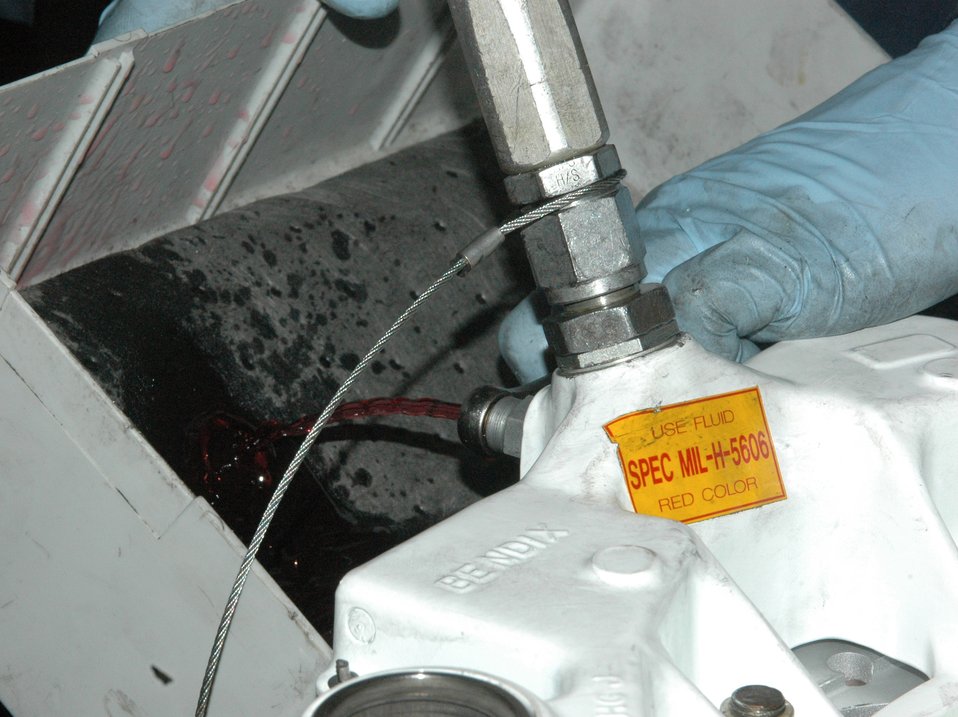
Intermediate repair facility keeps tankers flying

Sgt. Christopher Crespo releases hydraulic fluid from a reassembled brake to test for leaks Feb. 25 at the only in-theater central intermediate repair facility in Southwest Asia.